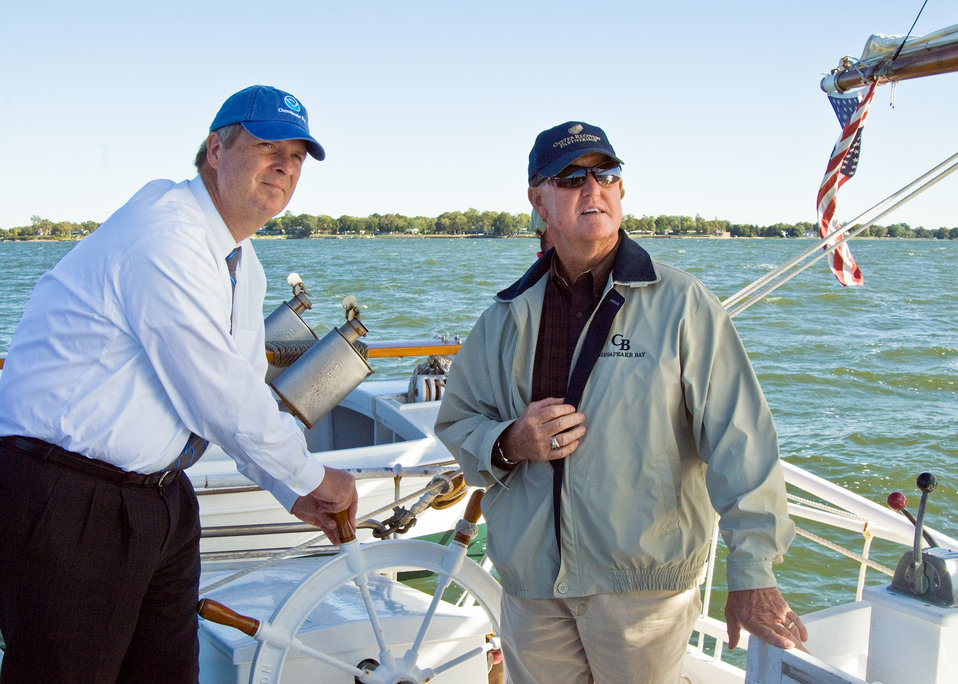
Agriculture Secretary Tom Vilsack (left) and Captain Russell Dize (right), waterman and Oyster recovery Program board member at the helm of the Chesapeake Bay Skipjack “Nathan of Dorchester.” The Chesapeake Bay Skipjacks are the only commercial sailing fleet still working under sail in the United States. Secretary Vilsack visited the University of Maryland Horn Point Center for Environmental Science Oyster Hatchery, Oyster Recovery Partnership in Cambridge, Maryland while on a rural tour of the Eastern Shore of Maryland, Monday, September 20, 2010. Secretary Vilsack toured water and soil conservation programs available through the Department of Agriculture. The conservation programs will aid rural communities, farmers and watermen on the Chesapeake Bay in their efforts to improve the water quality of the Chesapeake Bay. USDA Photo 10di1497-109 by Bob Nichols.